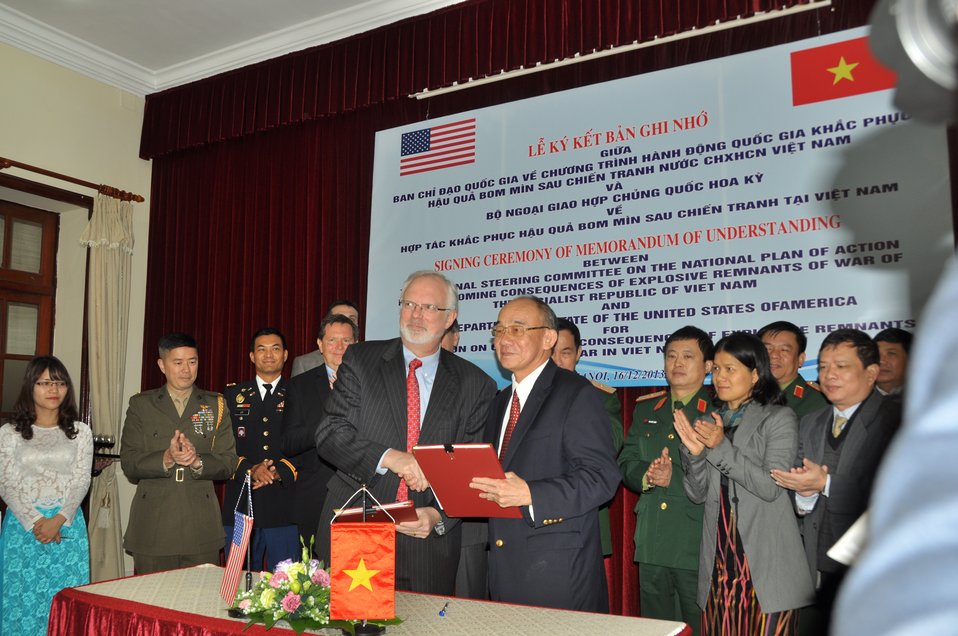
U.S. Embassador to Vietnam David Shear (left) and Mr. Bui Hong Linh, Vietnam’s Vice-Minister of the Ministry of Labor, Invalids and Social Affairs (MOLISA) and Committee 504 Vice-Chair, exchange the signed MoU.

Hanoi, December 16, 2013.